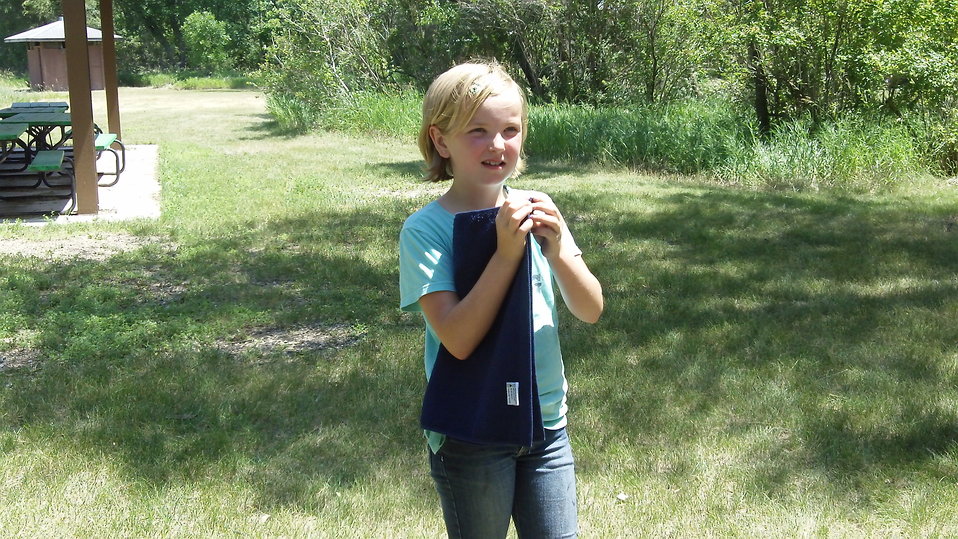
Get Your Goose On!

Photo taken at Huron Wetland Management District in east-central South Dakota.